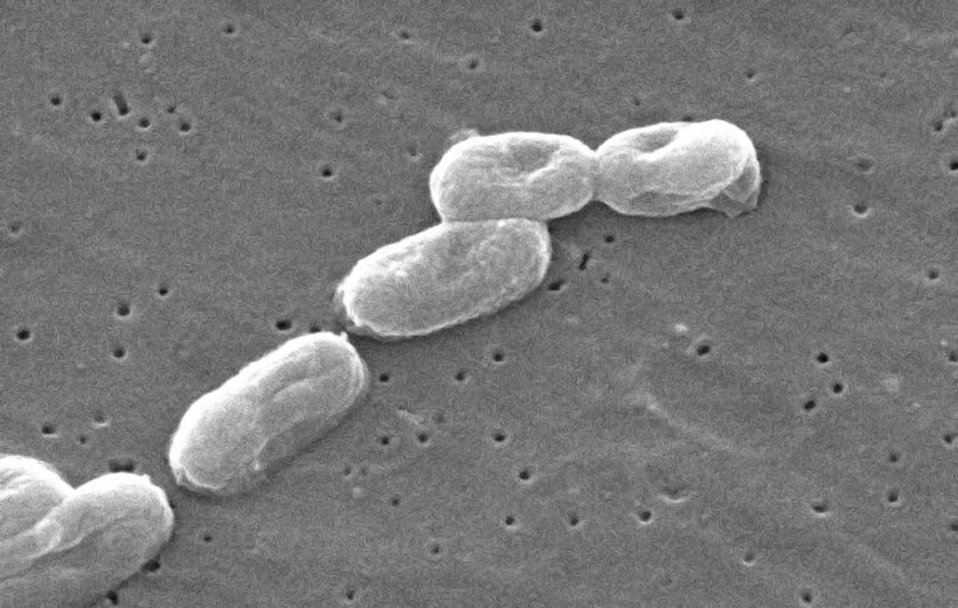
Scanning Electron Micrograph of Burkholderia cepacia. See PHIL 10608 for a colorized version of this image.